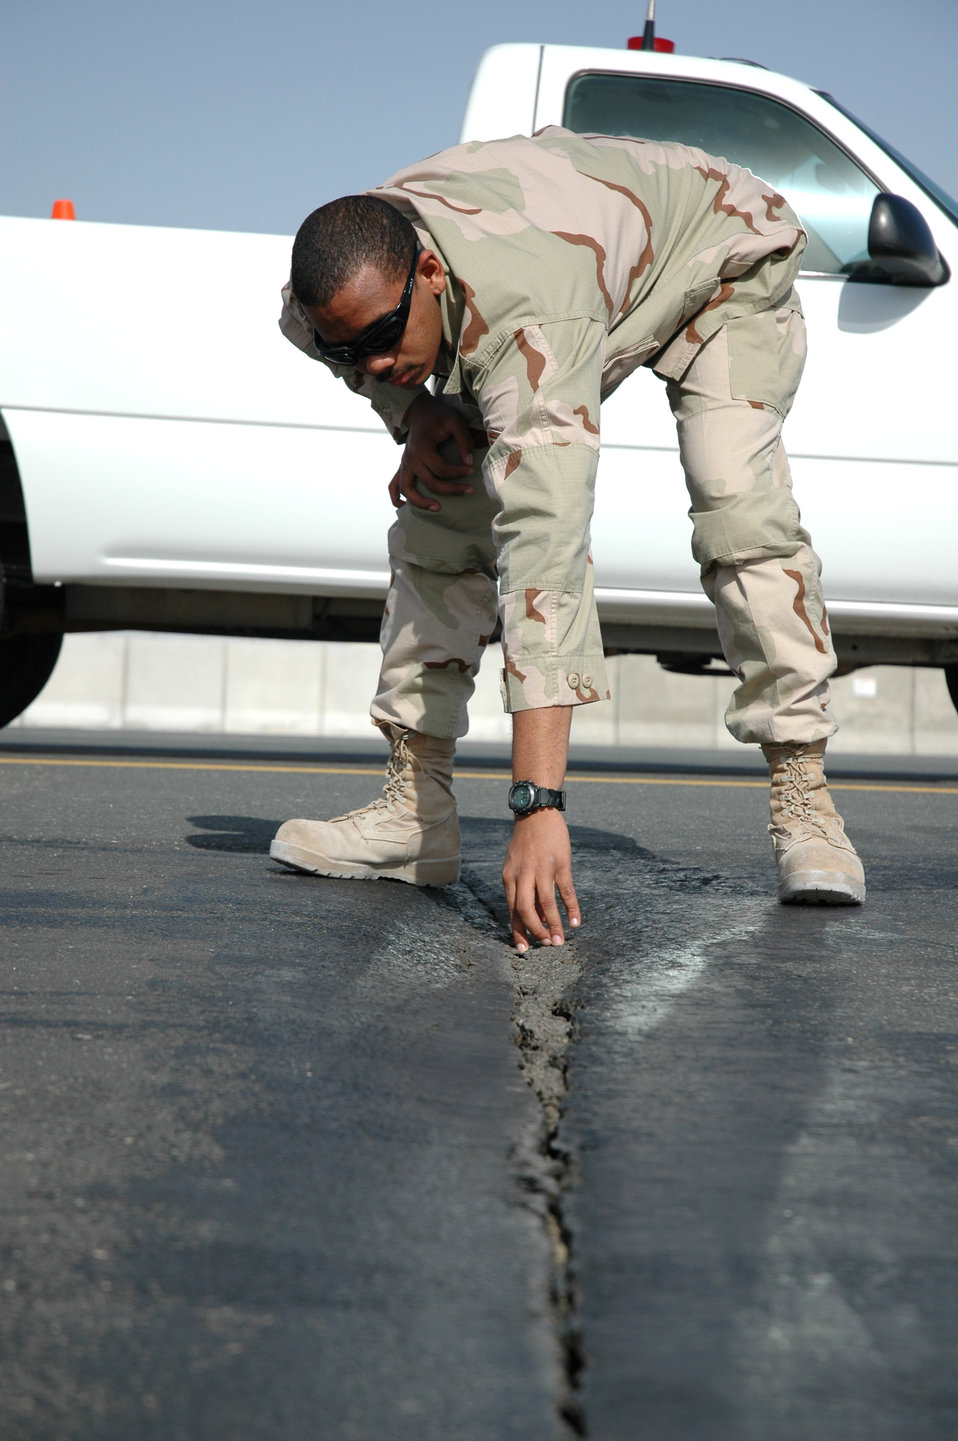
Airfield managers

Airman 1st Class John McAllister examines a crack on the flightline at a forward deployed location Wednesday, March 8, 2006. He is an airfield manager with the 379th Expeditionary Operational Support Squadron airfield manager.